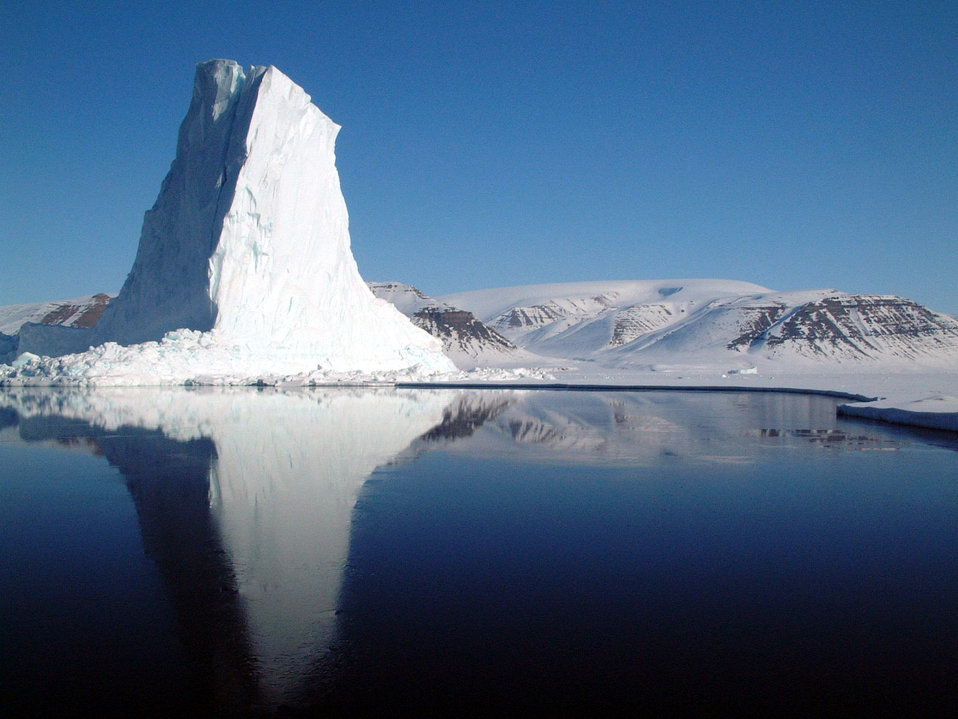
Three Airmen participate in dog-sled expedition

GREENLAND -- An iceberg at the edge of the Baffin Bay's sea ice is just one of the many sights three Airmen from Thule Air Base, Greenland, witnessed recently during a six-day dog-sledding expedition.